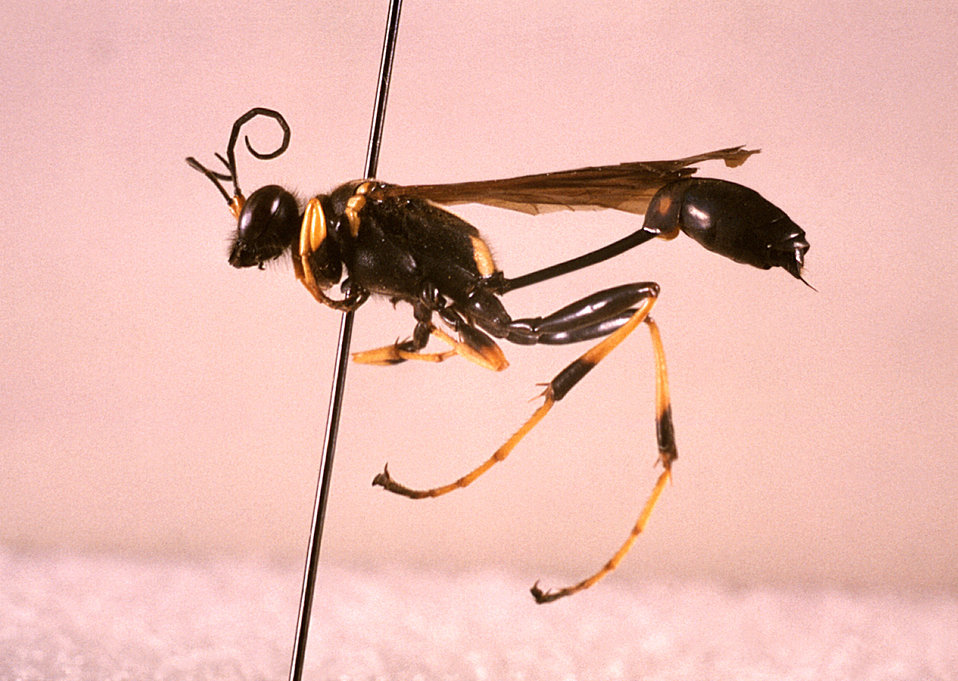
This image depicts a lateral view of a black and yellow 'mud dauber' wasp, Sceliphron caementarium.